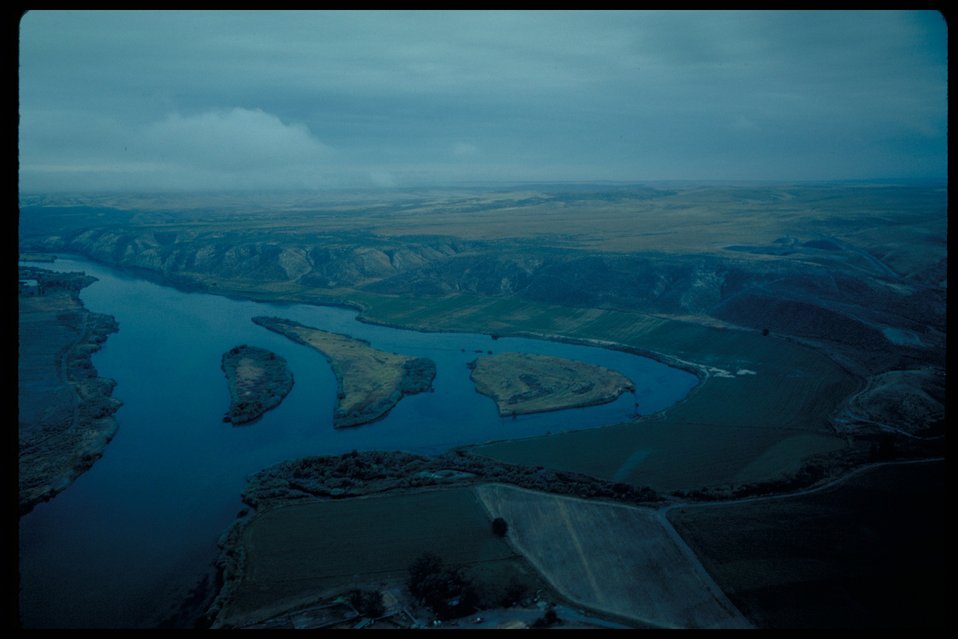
Three Island Crossing Oregon Trail Lower Snake River District